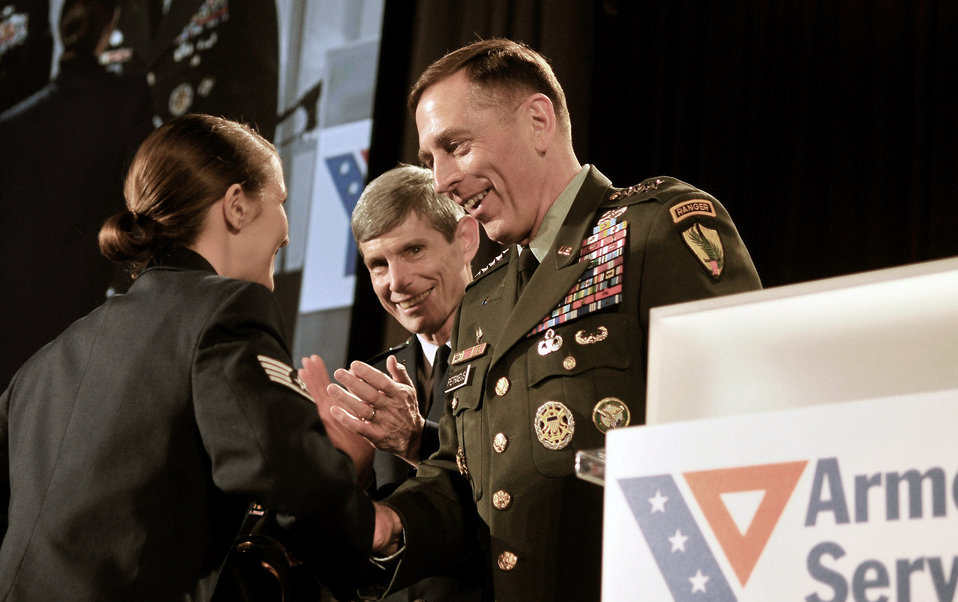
Gen. Patraeus praises medics, corpsmen

Staff Sgt. Stephanie Cates receives the Angels of the Battlefield Award from Army Gen. David Petraeus and Gen. Norton Schwartz during a dinner in honor of military medics and corpsman March 11 at the Ronald Reagan Building in Washington, D.C. General Patraeus is the commander of U.S. Central Command. General Schwartz is the Air Force chief of staff.